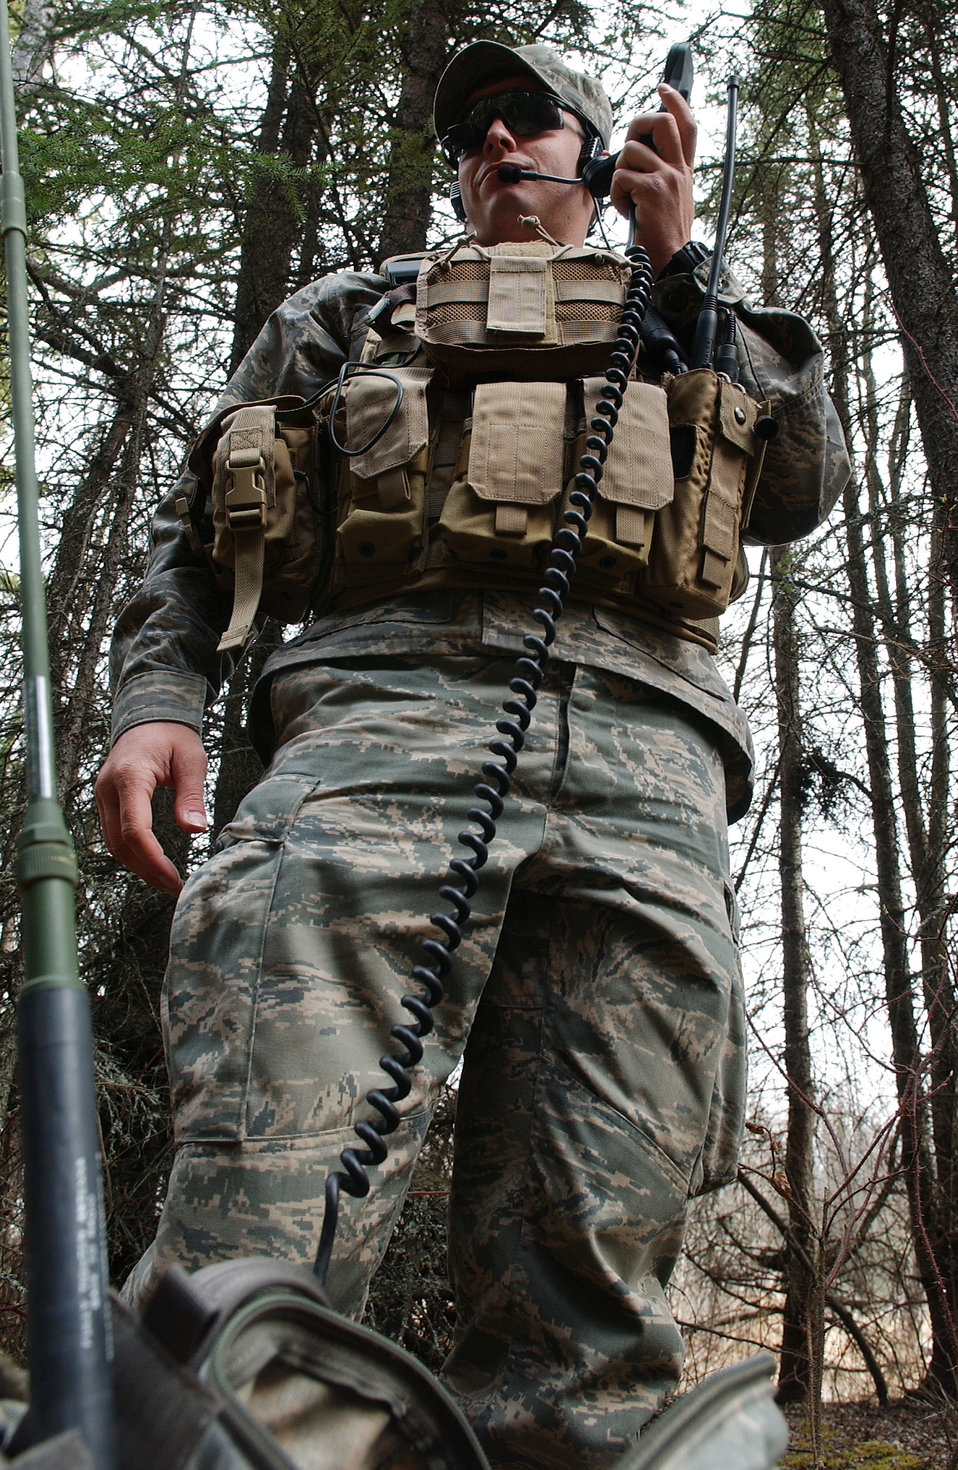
New experimental equipment enhances Airmen capabilities

Senior Airman Brandon Parker tests new experimental gear in the field during Exercise Northern Edge May 12 at Eielson Air Force Base, Alaska. After several tests, the Airmen are providing feedback on how the equipment worked and if improvements could be made before the equipment will be used in combat situations years from now. Airman Parker is a tactical air control party Airman assigned to Det. 1, 3rd Air Support Operation Squadron from Fort Richardson, Alaska.